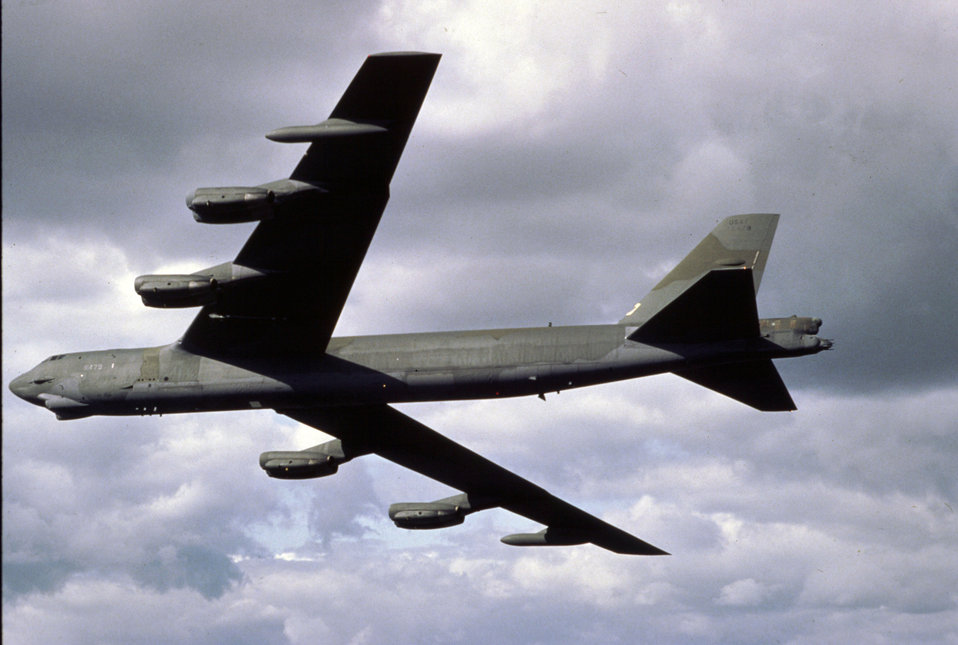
B-5 Stratofortress

1950s -- The B-5 Stratofortress joined the Air Force inventory in 1955.